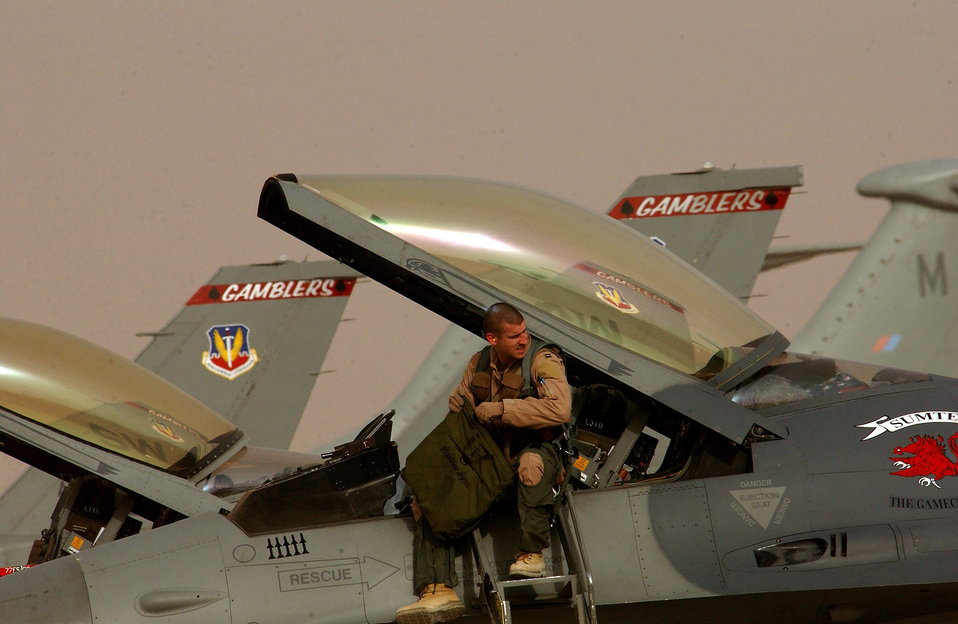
Ayers

OPERATION IRAQI FREEDOM -- Capt. Matt Ayres, an F-16 Fighting Falcon pilot assigned to the 363rd Air Expeditionary Wing, prepares for takeoff before a mission from a forward-deployed location in Southwest Asia on March 27. Ayres is deployed from the 77th Fighter Squadron, Shaw Air Force Base, S.C. Aircraft move around the clock to support Operation Iraqi Freedom.